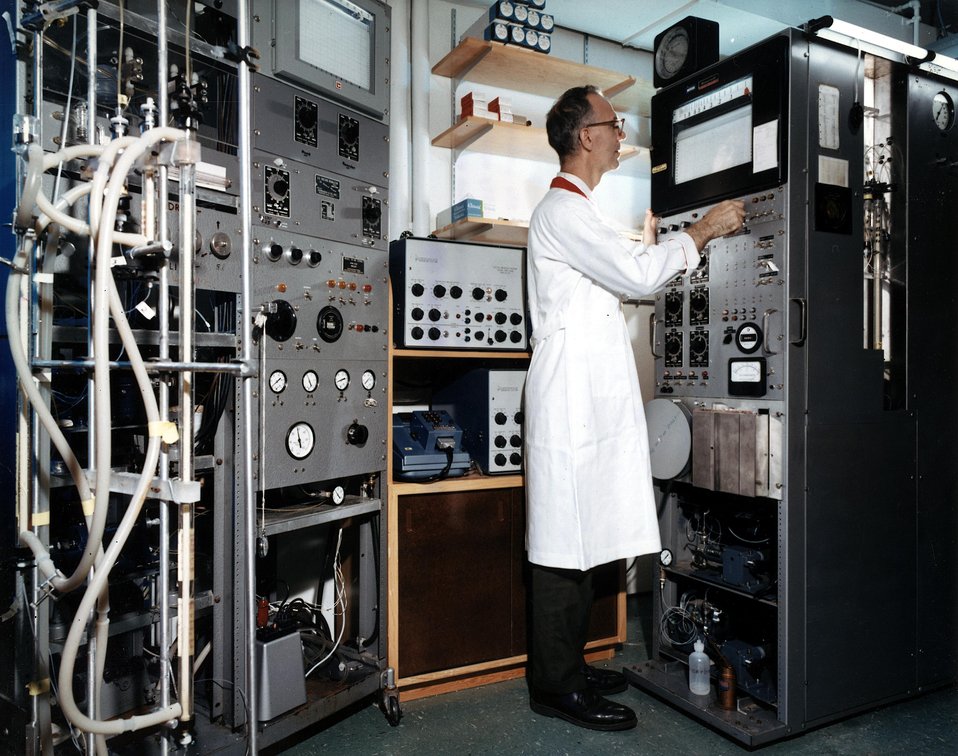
Operation of automatic amino acid analyzers. Amino acid mixtures are separated by chromatography on ion-exchange columns with the use of buffer solutions as eluents.